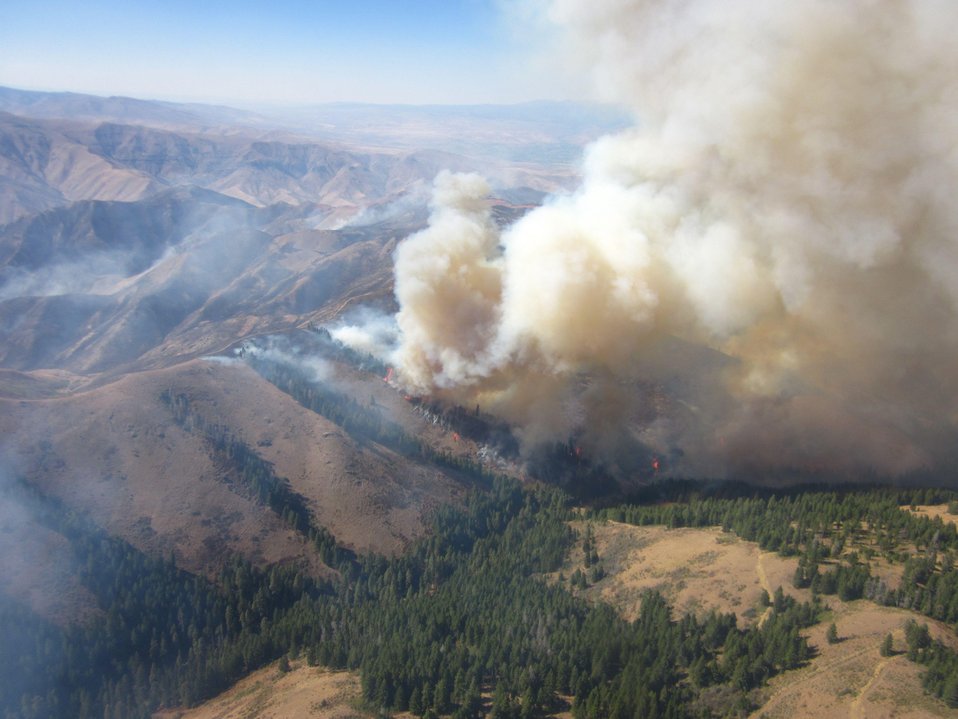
The Weiser Complex Fire in the Payette National Forest near Midvale, ID began on Aug. 29, 2013 by lightning has consumed approximately 29,456 acres and is 75% contained.